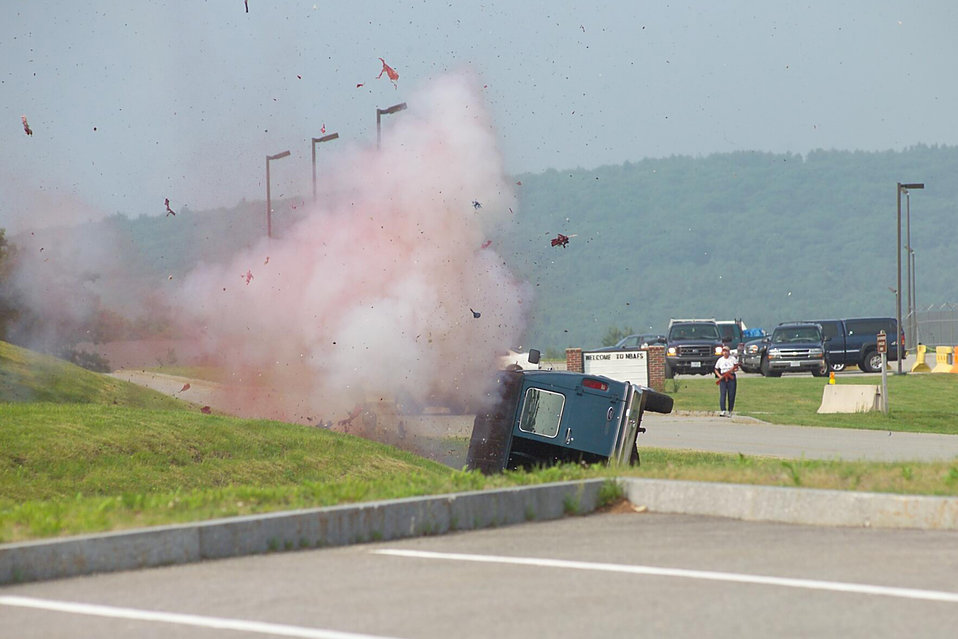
Granite Thunder 2005 rocks New Boston

NEW BOSTON AIR FORCE STATION, N.H. -- A van explodes at the kickoff of Granite Thunder 2005, a major accident response exercise held here recently. Military, state, county and local first-response authorities participated in the exercise.